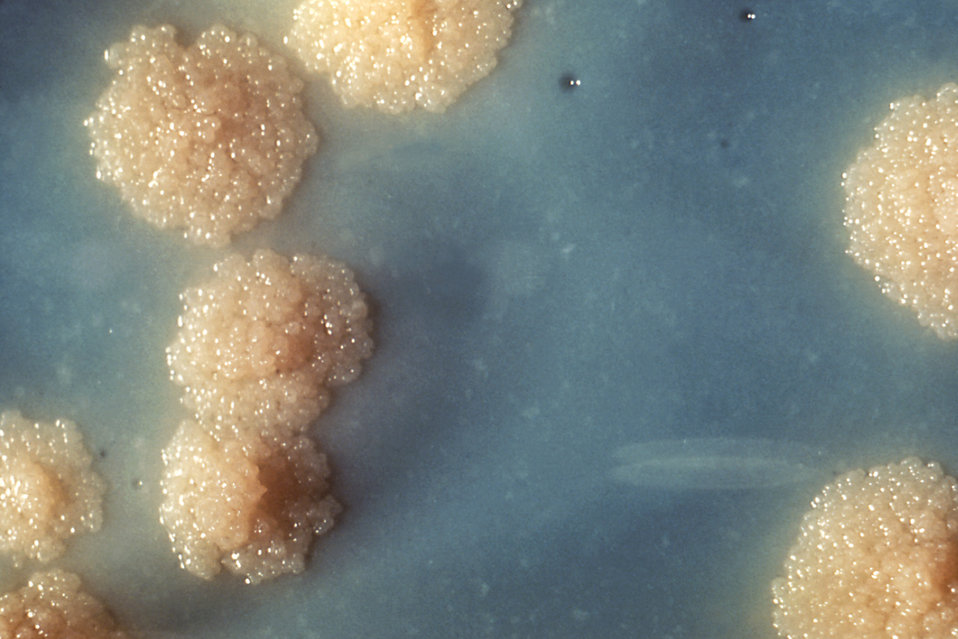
This is a close-up of a Mycobacterium tuberculosis culture revealing this organism's colonial morphology.